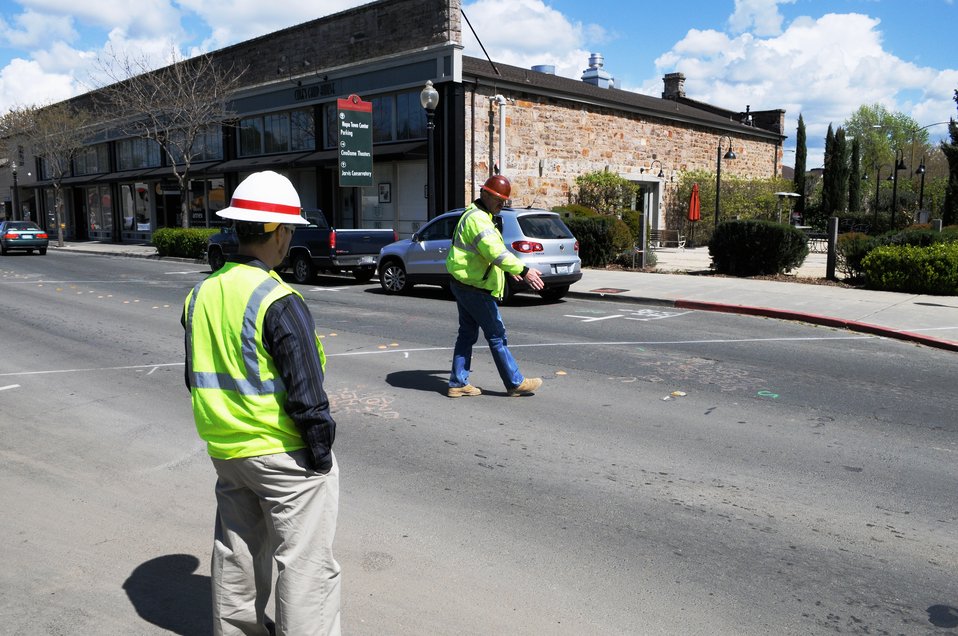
Reducing flood risk in Napa, Calif.

U.S. Army Corps of Engineers Sacramento District project manager Dave Cook (left) and ProVen Management Inc. superintendant Patrick Feeney outline April 8, 2011 where double-barrel box culverts will soon pass beneath Main Steet in Napa, Calif. The Corps will install the culverts during the next construction phase of a project to reduce the risk of flooding from nearby Napa Creek. ProVen Management is the contractor building the culverts.
“These box culverts will give the creek a straight shot out towards the river,” Cook said. In high water, Napa Creek often overtops and spills into adjacent neighborhoods, causing persistent flooding. The culverts will direct flood waters more quickly to the river and away from homes and businesses. The $14.8 million project, funded by the American Recovery and Reinvestment Act of 2009, is a joint effort of the Corps, the city of Napa, and the Napa Flood Control and Water Conservation District, to reduce flood risk for the city.